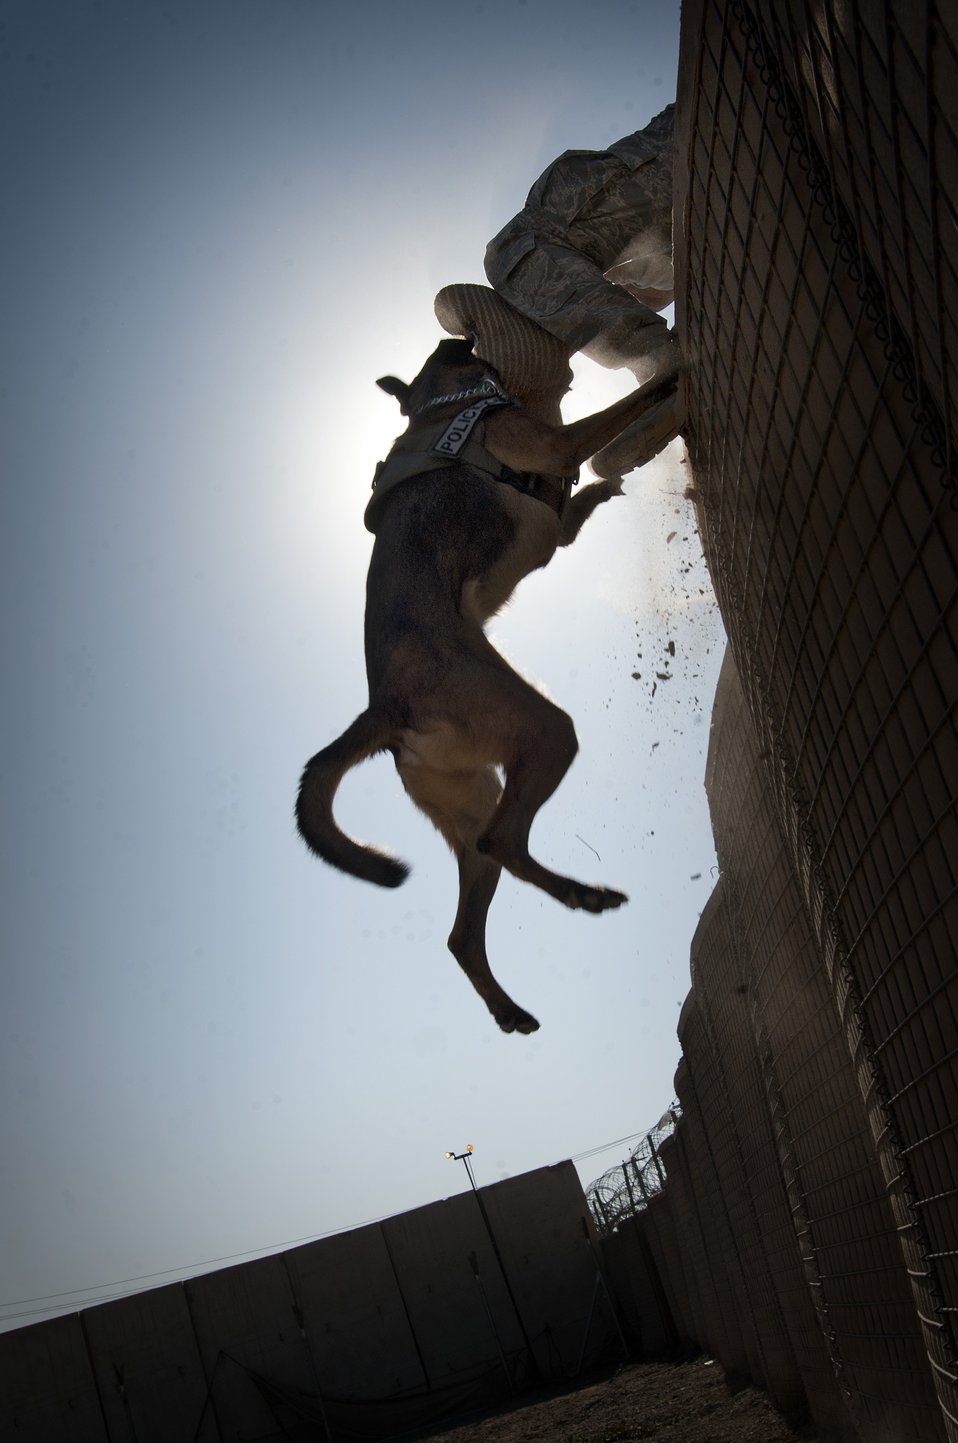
An Airman's Best Wingman

Geri, a patrol and explosive detector dog assigned to the 447th Expeditionary Security Forces Squadron, jumps more than 7 feet onto a Hesco barrier to catch a simulated attacker while training on an obstacle course in Baghdad, Iraq, Dec. 9, 2011. For the last six months Geri has been supporting Operation New Dawn by providing explosive and psychological deterrence.